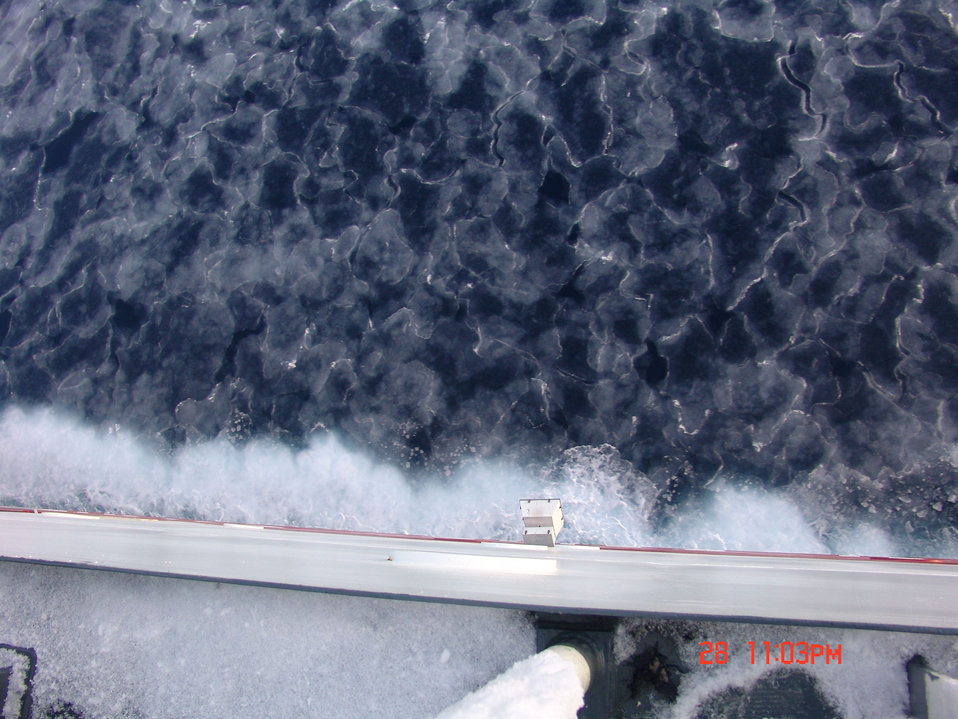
Interlocking pancake ice which with further freezing and jostling will form larger floes.